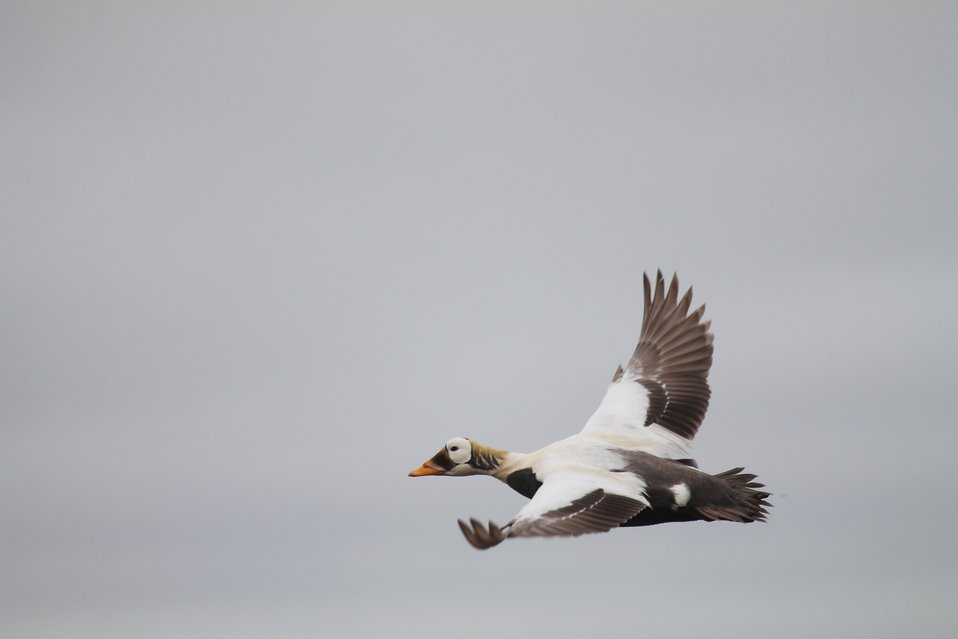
Spectacled Eider in Flight

Spectacled Eider research occurs on Yukon Delta NWR, on Kigigak Island. This male was seen flying over the tundra during nest initiation.

USFWS Yukon Delta NWR